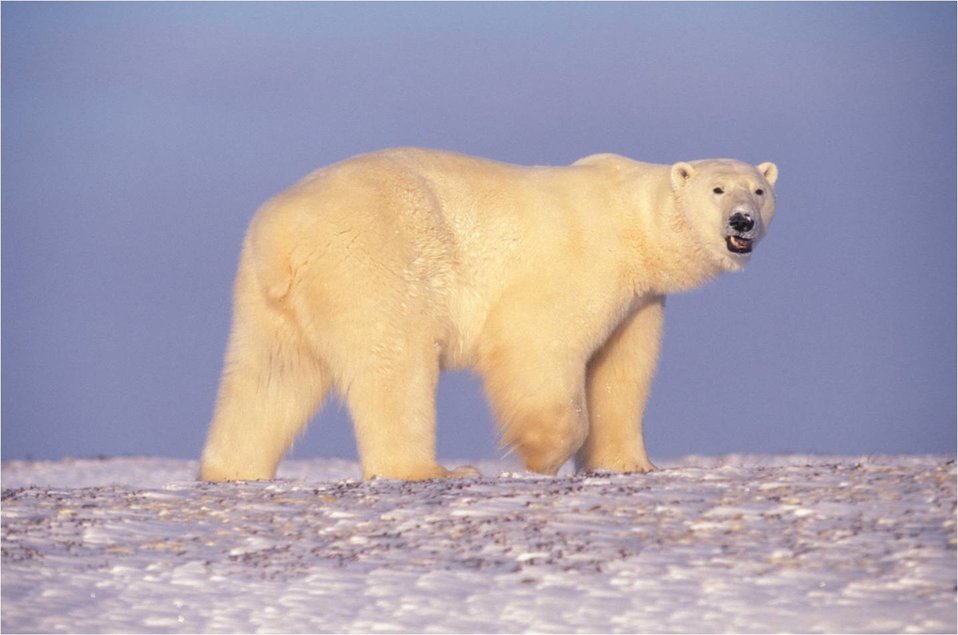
Polar Bear in Arctic Alaska

A wary bear checks out the photographer.